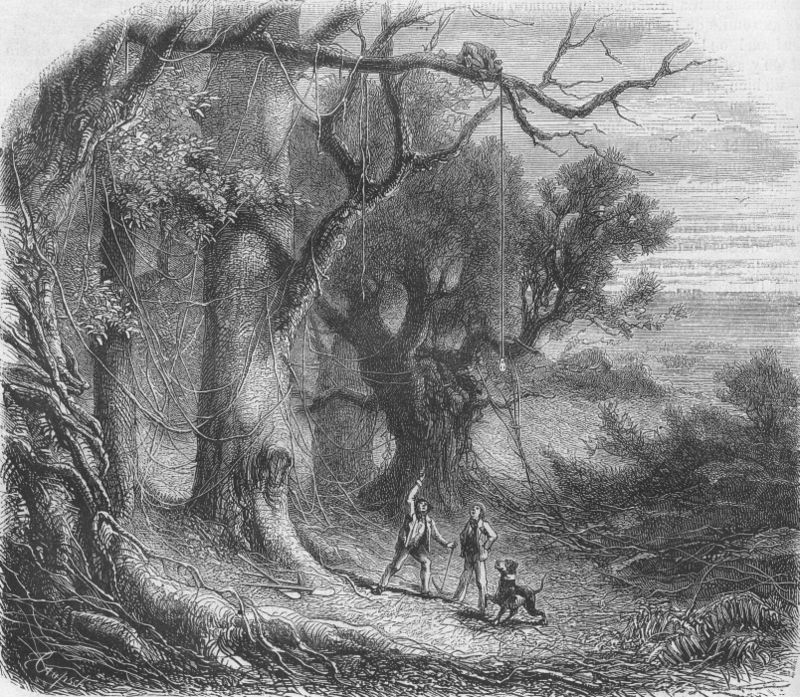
An illustration from Jules Verne's essay 'Edgard Poë et ses oeuvres' (Edgar Poe and his Works,1862) drawn by Frederic Lix or Yan' Dargent. Polski: Ilustracja artykułu Juliusza Verne'a 'Edgard Poë et ses oeuvres' (Edgar Poe i jego dzieła, 1862) autorstwa Frederica Lixa lub Yan' Dargenta. Français : Jules Verne: 'Edgard Poë et ses oeuvres' (1862), dessins par Frederic Lix ou Yan' Dargent. Orginal text: Français : Le scarabée d’or.